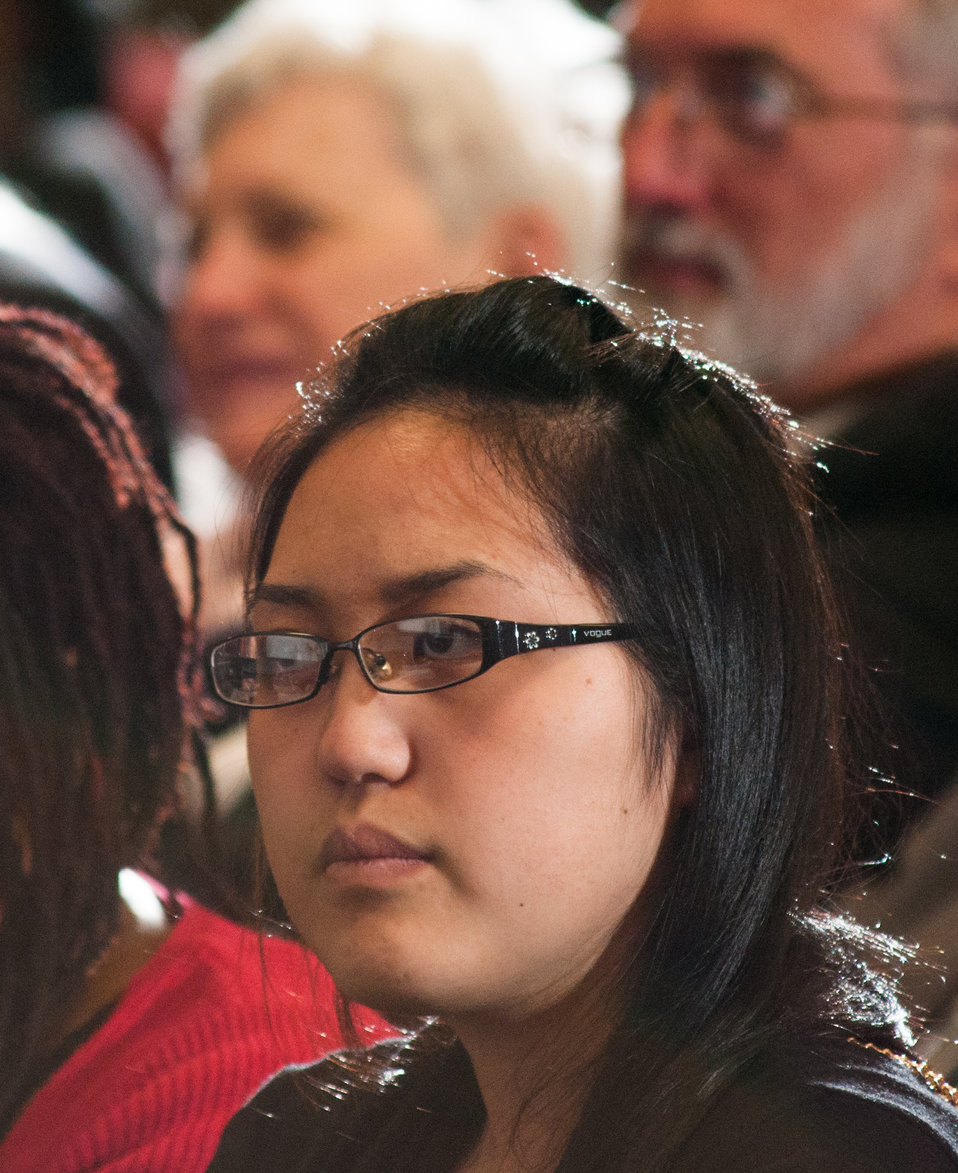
The audience listens to U.S. Department of Agriculture (USDA), Office of the Secretary Deputy Chief of Staff Oscar Gonzales speak, during the USDA Asian Pacific American Heritage Month Observance, at the USDA headquarters in Washington, D.C., on Thursday, May 23, 2013. This year’s theme is “Building leadership; Embracing the Cultural Values and Inclusions.”